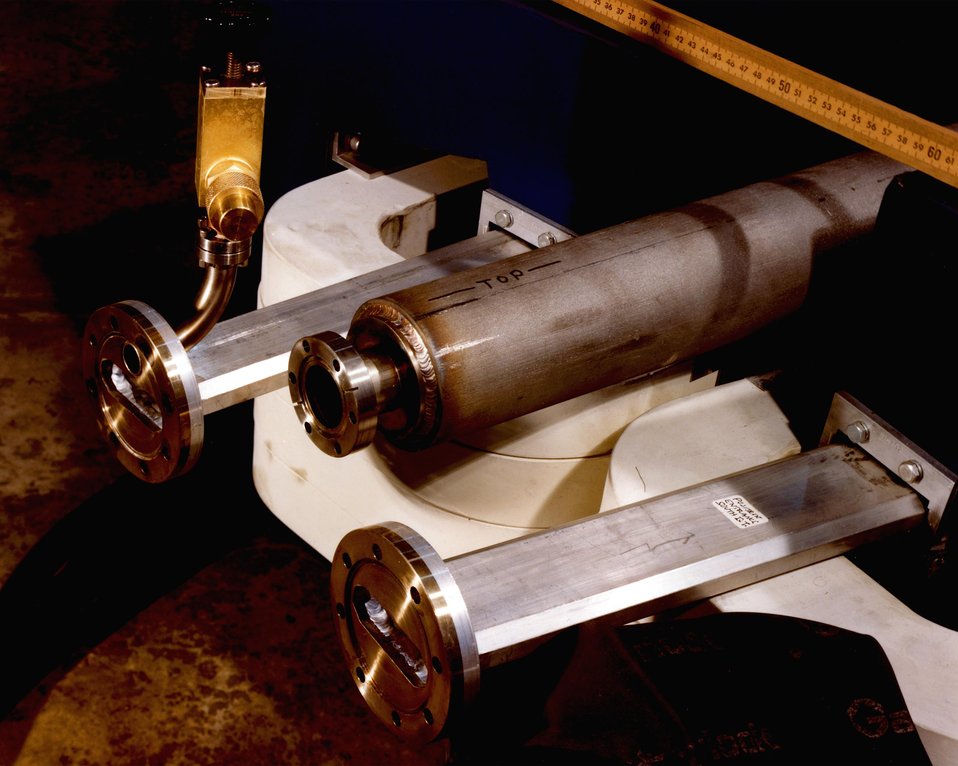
CLOSEUP OF THE MAIN SLAC BEAM LINE IN CENTER, AND NORTH & SOUTH PEP BEAM LINES.

THE POSITRON-ELECTRON PROJECT (PEP) IS A JOINT UNDERTAKING OF STANFORD LINEAR ACCELERATOR CENTER (SLAC) AND THE LAWRENCE BERKELEY LABORATORY (LBL). THE PEP MACHINE IS DESIGNED TO STORE BEAMS OF ELECTRONS AND POSITRONS CIRCULATING IN OPPOSITE DIRECTIONS AT SINGLE-BEAM ENERGIES BETWEEN 4 GEV AND 18 GEV. THE SOURCE OF THE BEAMS WILL BE THE PRESENT SLAC ACCELERATOR. THE COUNTER-ROTATING BEAMS OF ELECTRONS AND POSITRONS WILL COLLIDE WITH EACH OTHER AT SIX POINTS IN THE MACHINE. THESE COLLISION OR BEAM-INTERACTION POINTS WILL BE USED FOR HIGH-ENERGY PHYSICS EXPERIMENTS.